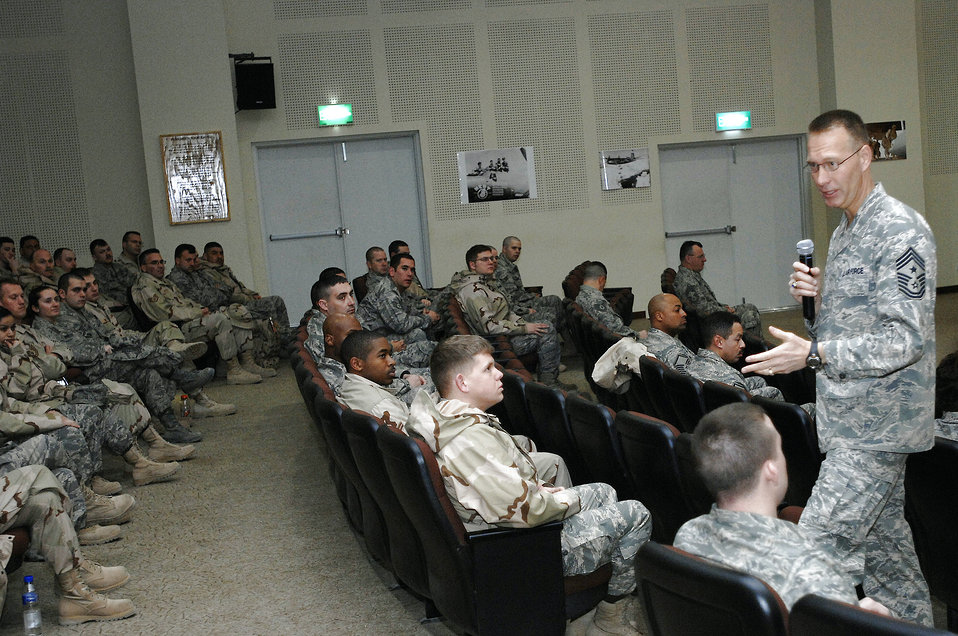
Who is on your team?

Chief Master Sgt. Todd Small talks to Airmen deployed to the 386th Air Expeditionary Wing about the war on terrorism and the important roll the Air Force plays in the future successes in the deployed region Jan. 24 at a Southwest Asia air base. Chief Small is the former 9th Air Force and U.S. Air Forces Central command chief master sergeant.